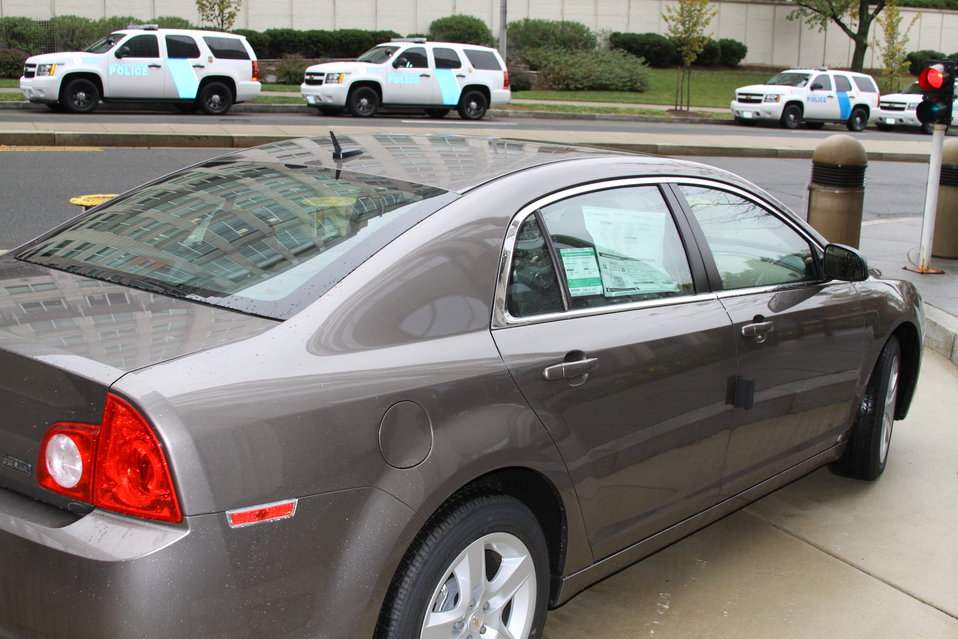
FCC Official Vehicle Tour